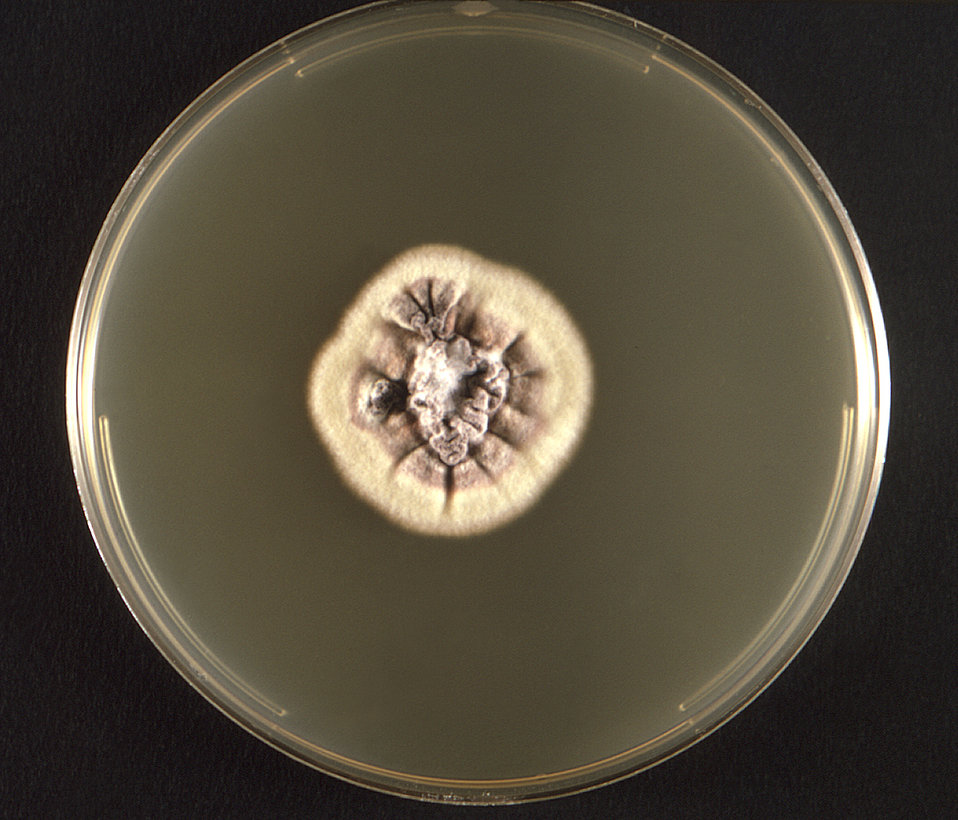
This photograph depicts the frontal view of a Petri dish within which a fungal colony of a Mexican isolate of Trichophyton rubrum var. rodainii had been cultured atop a medium of Sabouraud's agar.